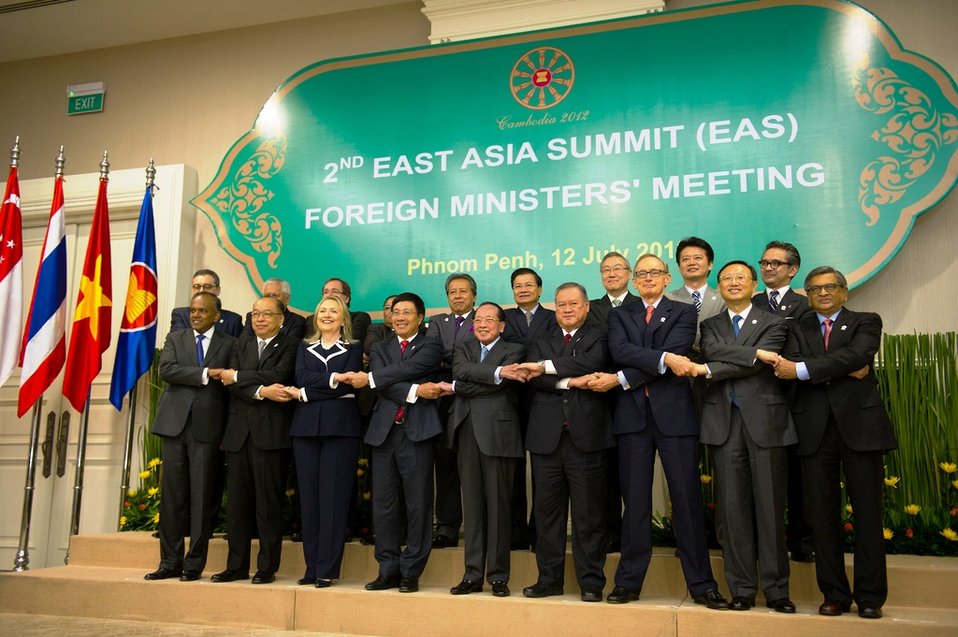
Secretary Clinton With Foreign Ministers at the East Asia Summit

U.S. Secretary of State Hillary Rodham Clinton participates in the East Summit Asia Summit Foreign Ministers Meeting in Phnom Penh, Cambodia, on July 12, 2012.